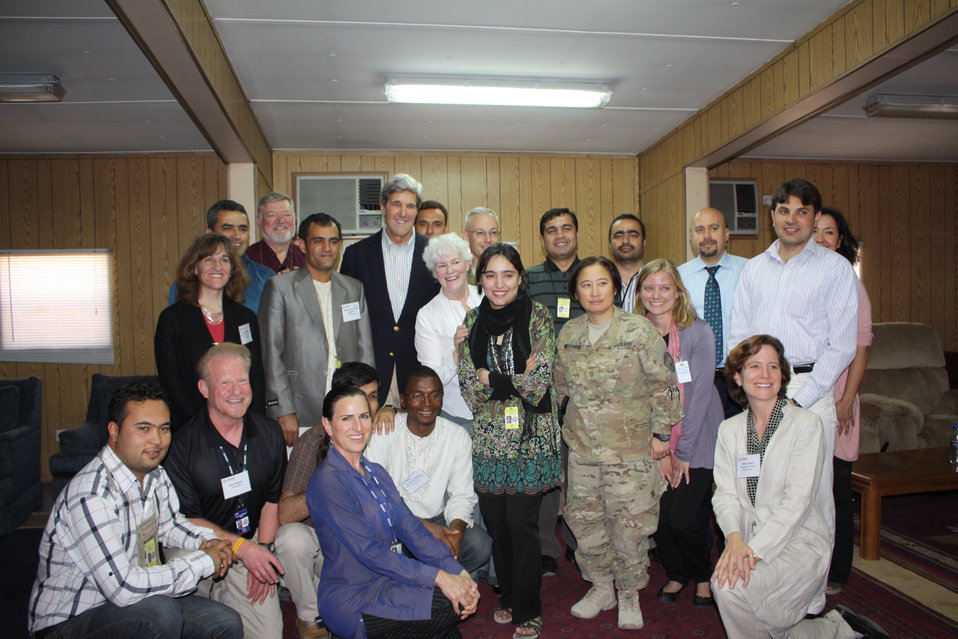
Jon Kerry at DG Fundamental 5-15-11